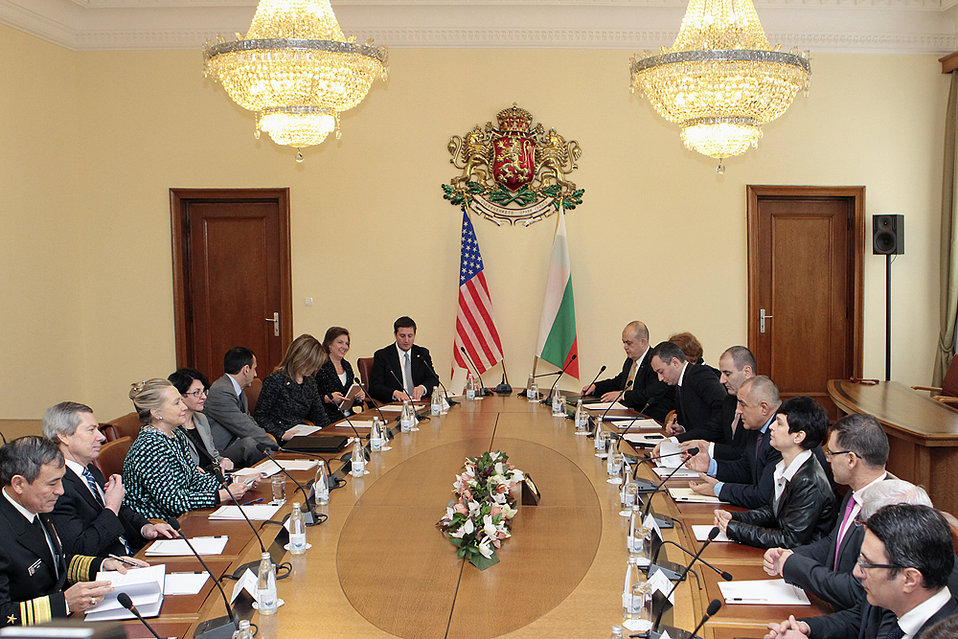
Secretary Clinton Meets With Bulgarian Ministers

U.S. Secretary of State Hillary Rodham Clinton meets with Bulgarian Prime Minister Boyko Borissov, Bulgarian Deputy Prime Minister and Minister of Interior Tsvetan Tsvetanov, Bulgarian Deputy Prime Minister and Minister of Finance Simeon Dyankov, and Bulgarian Foreign Minister Nickolay Mladenov, at the Council of Ministers in Sofia, Bulgaria, on February 5, 2012. Also pictured in the photo: U.S. Ambassador to Bulgaria James Warlick, Assistant Secretary of State for European and Eurasian Affairs Philip Gordon, Senior Advisor Philippe Reines, and Spokesperson Victoria Nuland.